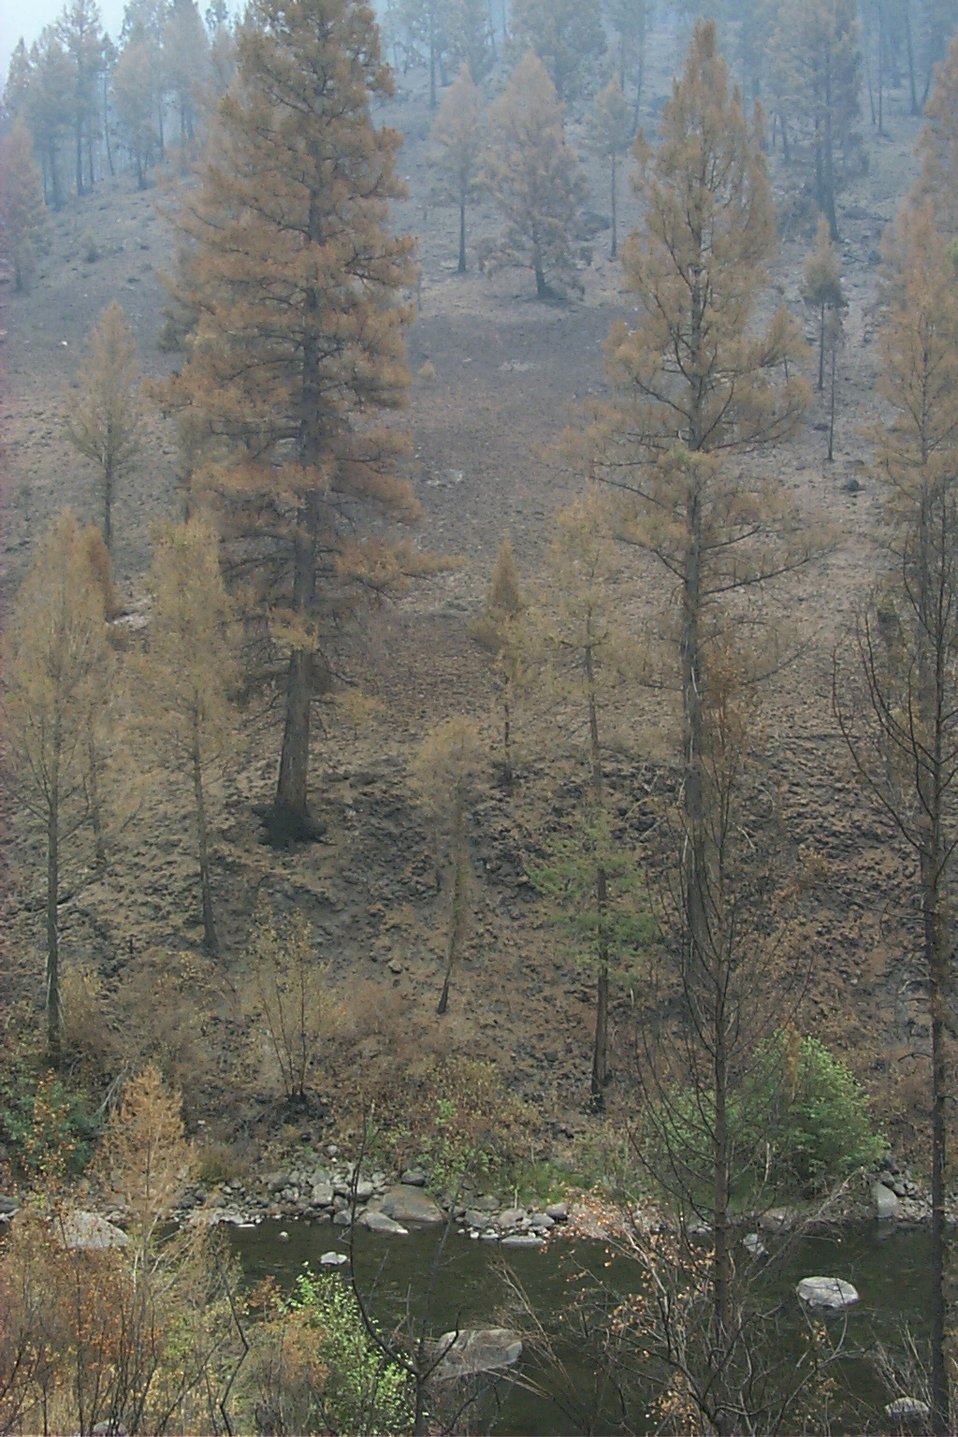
Burn area Fire Clearwater Fire Salmon Field Office USRD Upper Snake River District